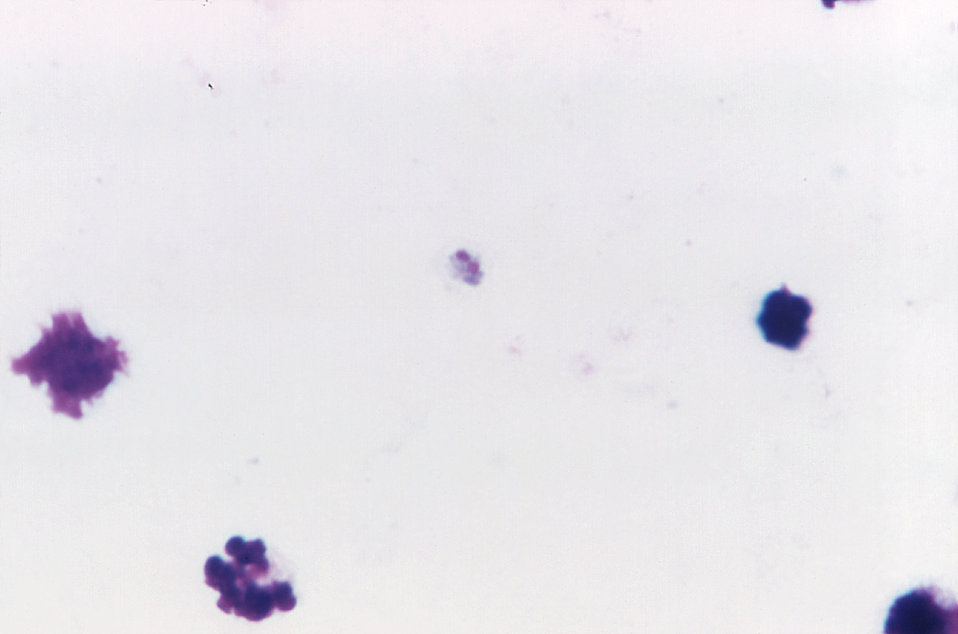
Magnified 1125X, this photomicrograph revealed the presence of a Plasmodium malariae immature schizont.